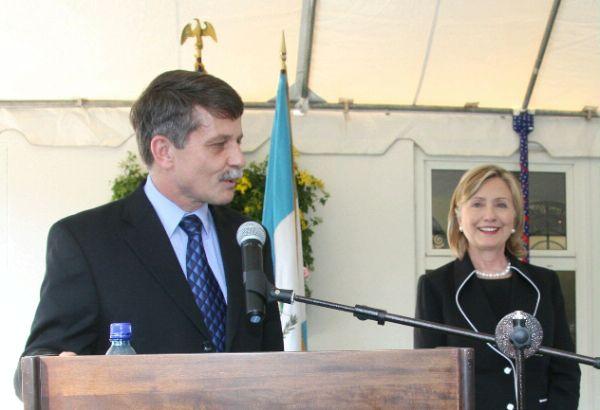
U.S. Ambassador Stephen McFarland Introduces Secretary Clinton

U.S. Ambassador Stephen McFarland introduces U.S. Secretary of State Hillary Rodham Clinton at the official residence of the ambassador in Guatemala City, Guatemala, March 5, 2010.